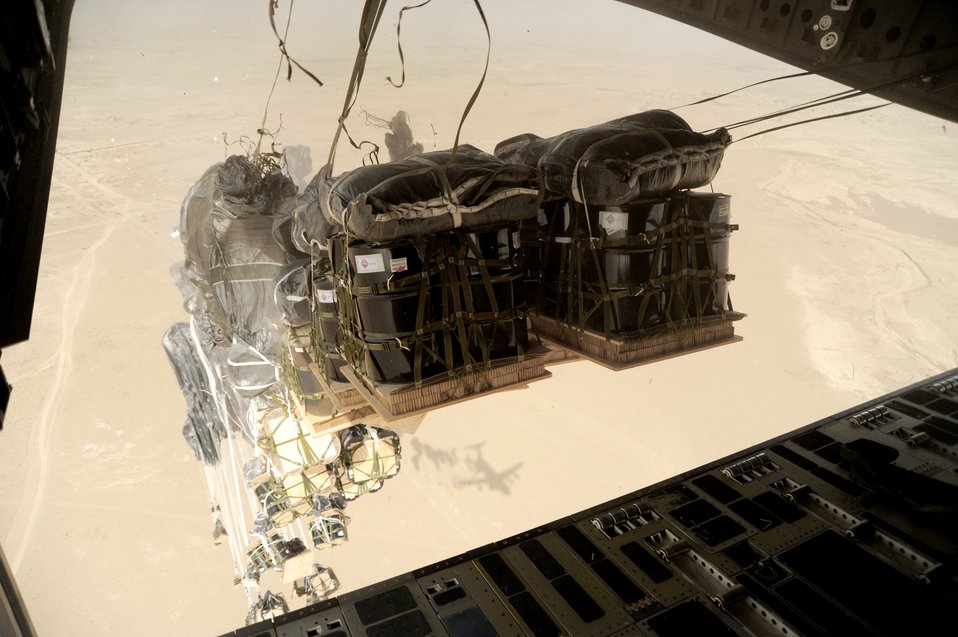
Aerial refueling, plan B

Forty bundles of JP-8 fuel leave the back of a C-17 Globemaster III during an airdrop by members of the 816th Expeditionary Airlift Squadron Aug. 13, 2010, in Southwest Asia. The drop was part of Operation Everest, a week-long push to exercise the theater drop capability of the C-17.